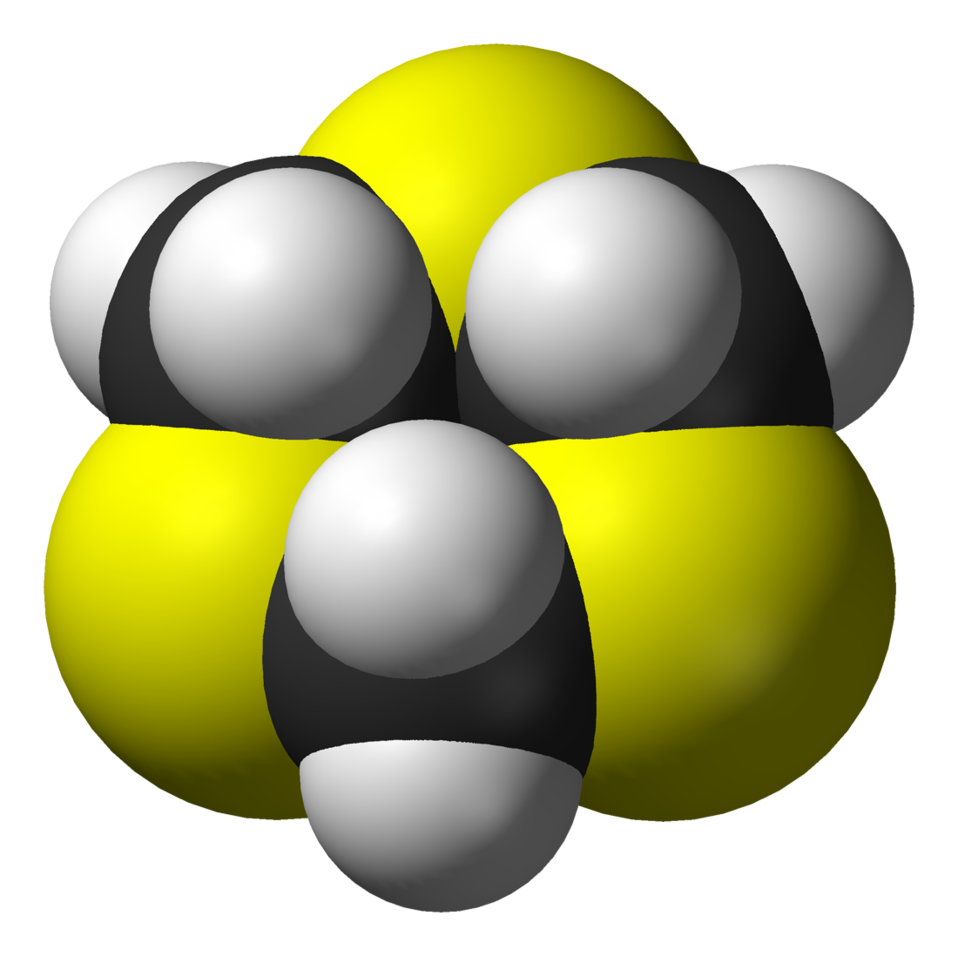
Space-filling model of the 1,3,5-trithiane molecule, C3H6S3. X-ray crystallographic data from G. Valle, V. Busetti, M. Mammi and G. Carazzolo (August 1969). 'The crystal structure of 1,3,5-trithiane: a refinement'. Acta Cryst. 'B25' (8): 1432-1436. DOI:10.1107/S0567740869004171.